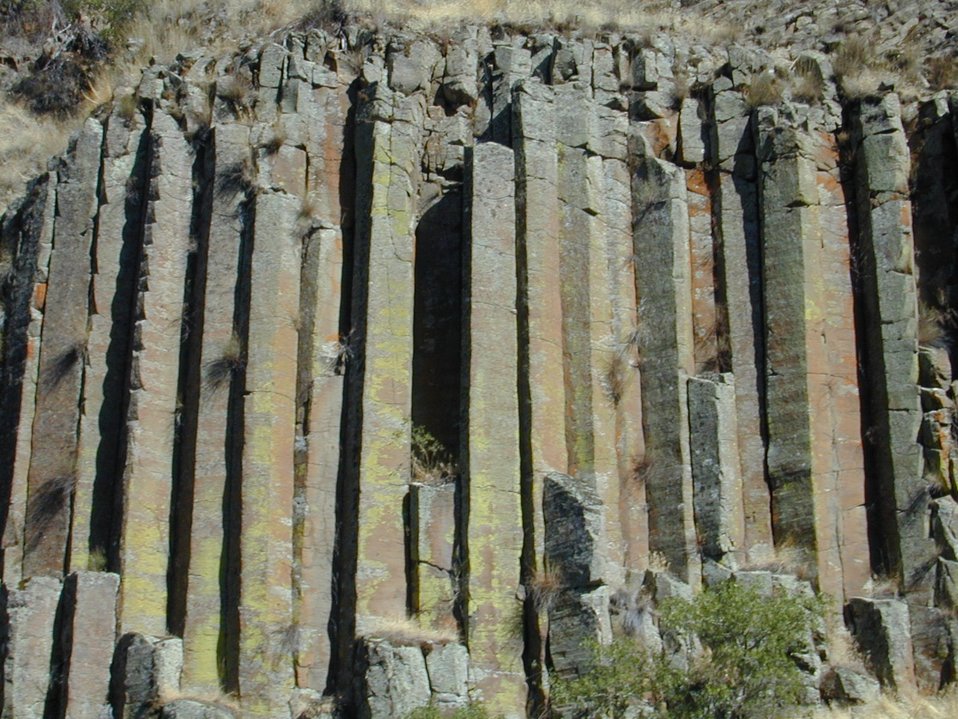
Hexagonal Basalt along the Lower Salmon River Cottonwood Field Office UCSC Upper Columbia Salmon Clearwater District